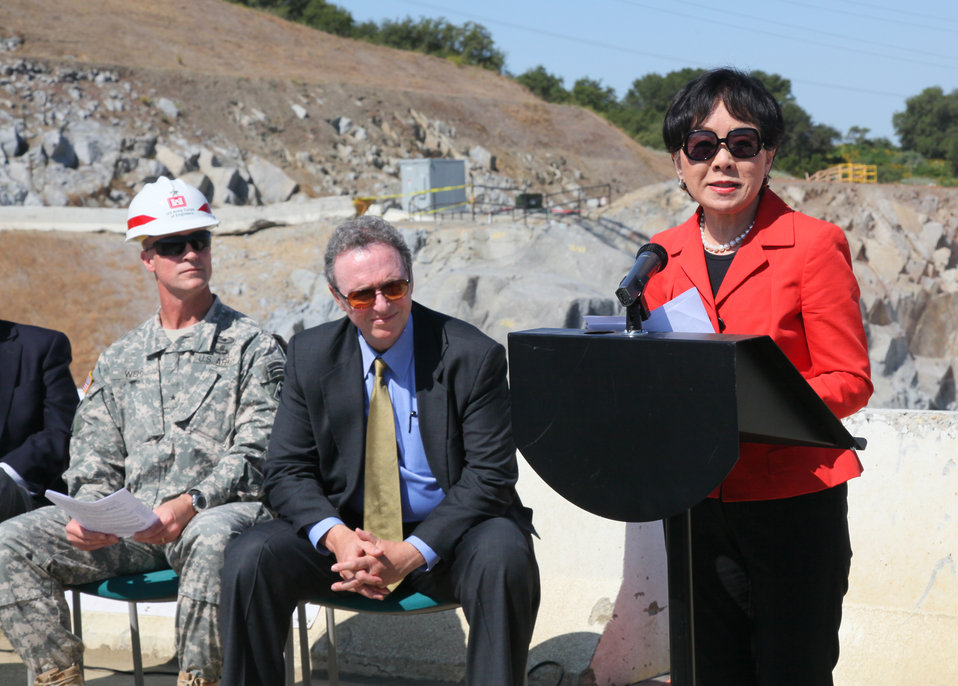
First concrete ceremony for Folsom Dam spillway

U.S. Rep. Doris Matsui (right) addresses the crowd at a ceremony commemorating the first concrete placement for the auxiliary spillway control structure at Folsom Dam in Folsom, Calif., May 24, 2012. The U.S. Army Corps of Engineers, together with the U.S. Bureau of Reclamation and state and local partners, is building the spillway to reduce flood risk throughout the Sacramento region. Sitting beside Matsui are Congressman Dan Lungren (right) and Brig. Gen. Mike Wehr, commander of the Corps’ South Pacific Division.